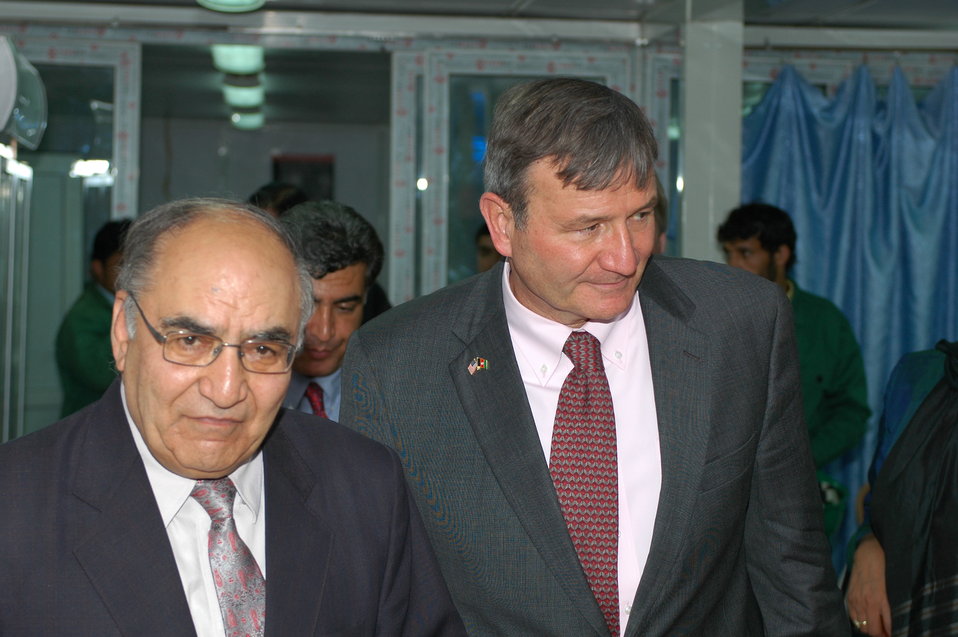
105 MW Tarakhil Power Plant Handover